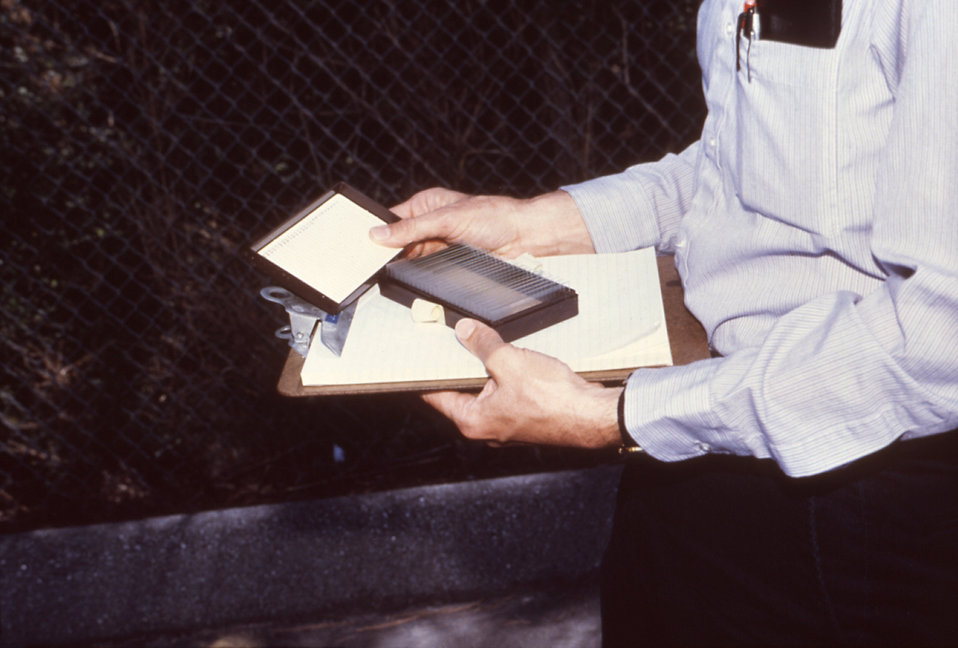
This 1981 photograph depicted a field technician as he was carrying an open box of fresh glass microscope slides, and a clipboard in order to collect data during an arbovirus vector field study.